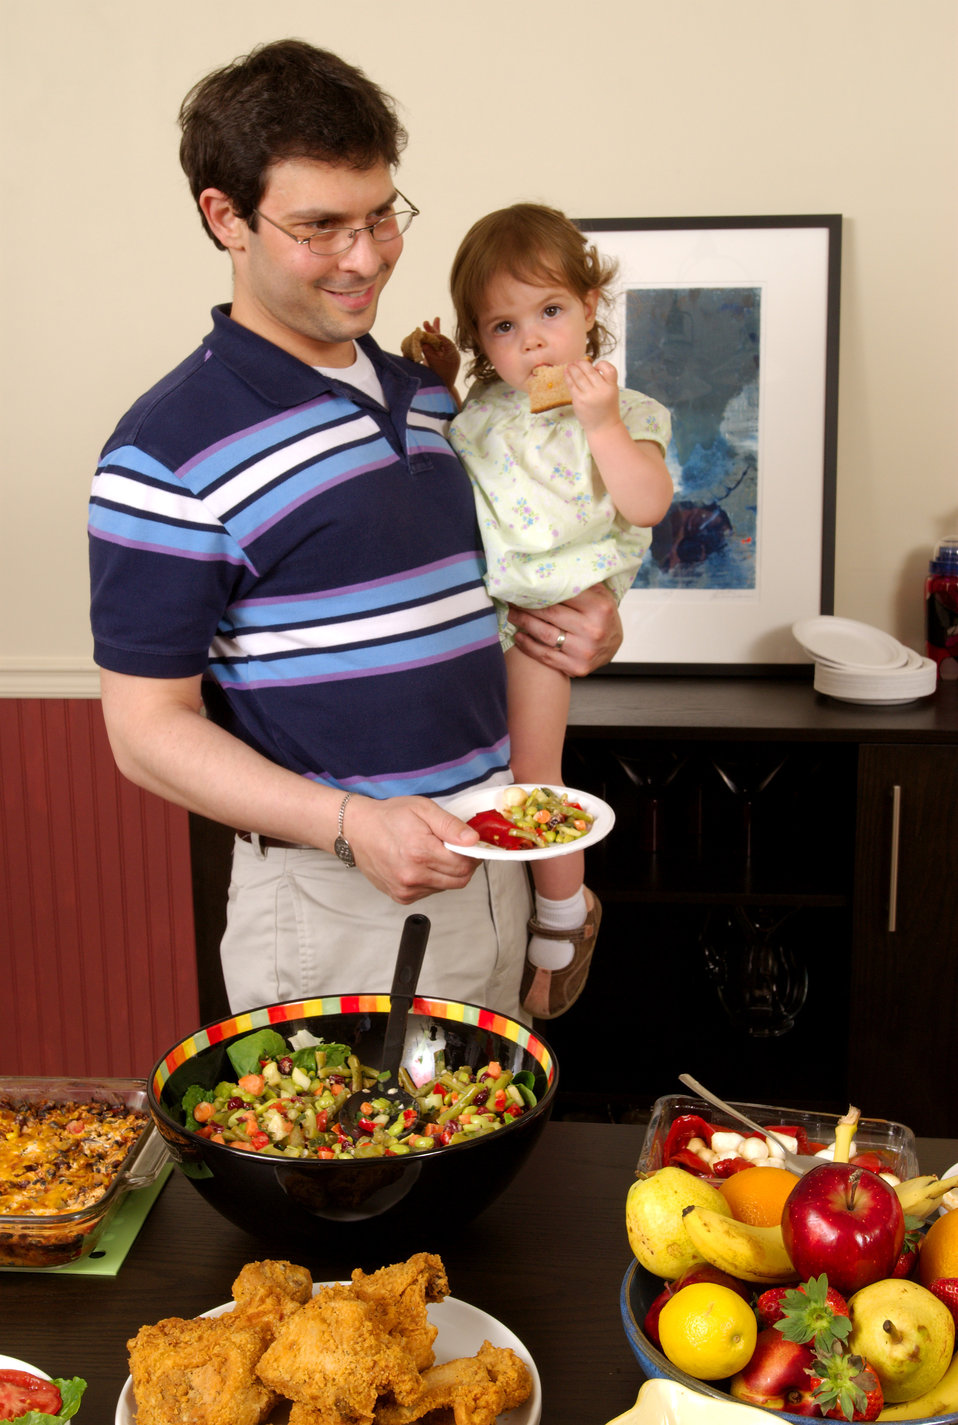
This image depicts a very young girl in the arms of her father, eating a slice of whole wheat bread, which is a much better choice over a white bread alternative.